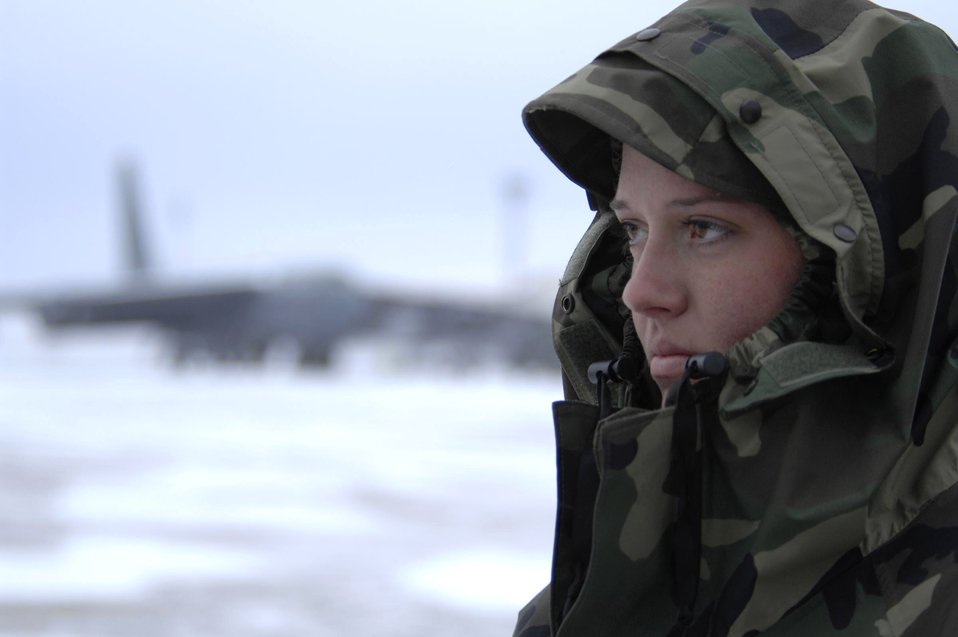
Enduring the cold

Airman Shaina Smith waits for a B-52 Stratofortress aircrew Jan. 8 at Minot Air Force Base, N.D. Airman Smith and the rest of her maintenance team worked through harsh sub-zero temperatures and gusts of wind up to 50 mph.